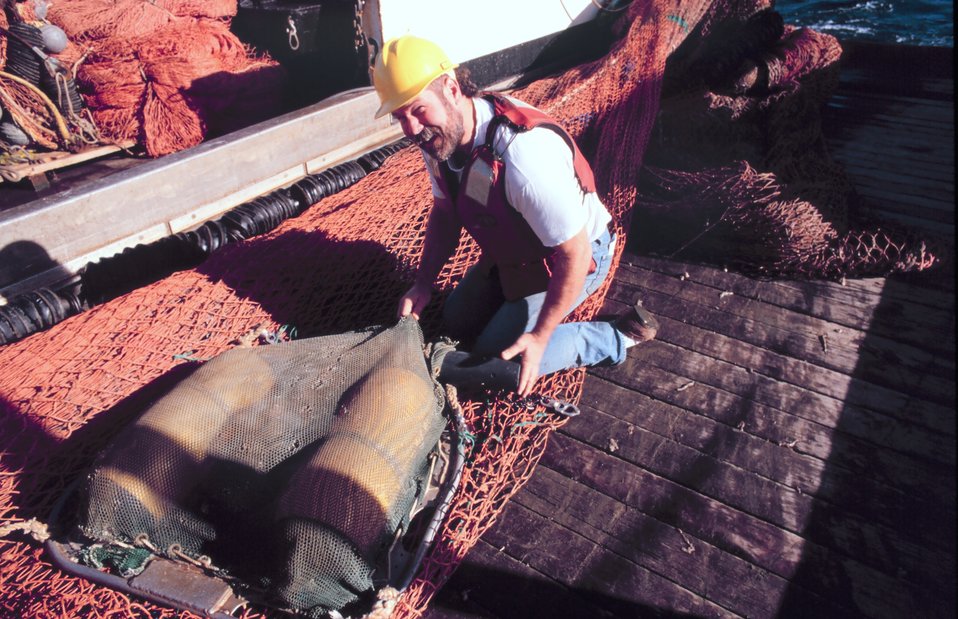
Attaching acoustic sensors of trawl mensuration system to the trawl.